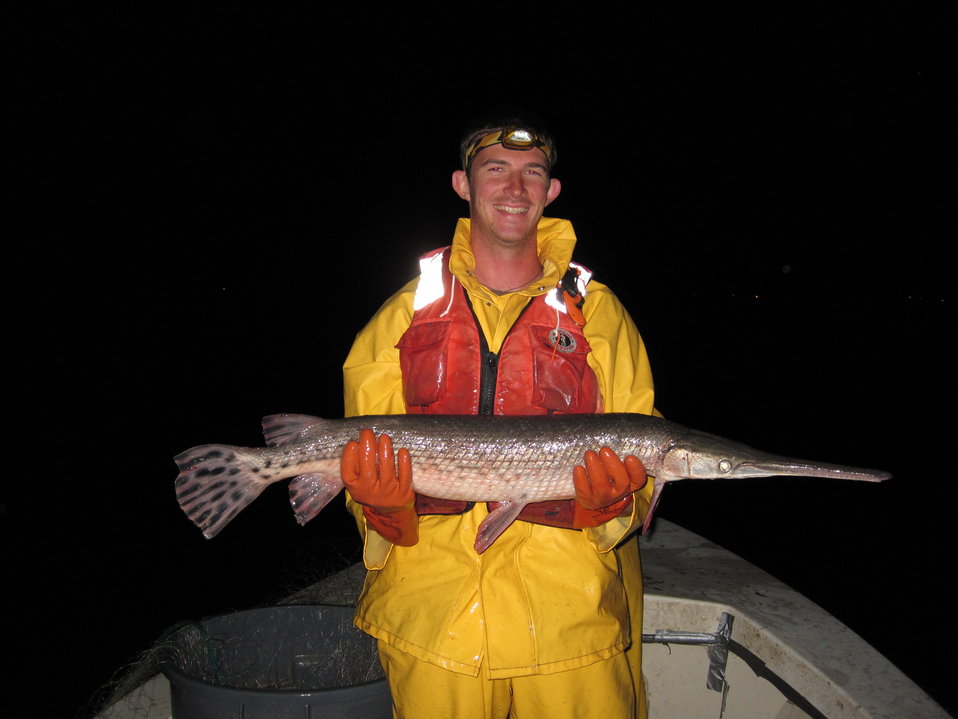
Longnose gar at the Maryland Fishery Resources Office.